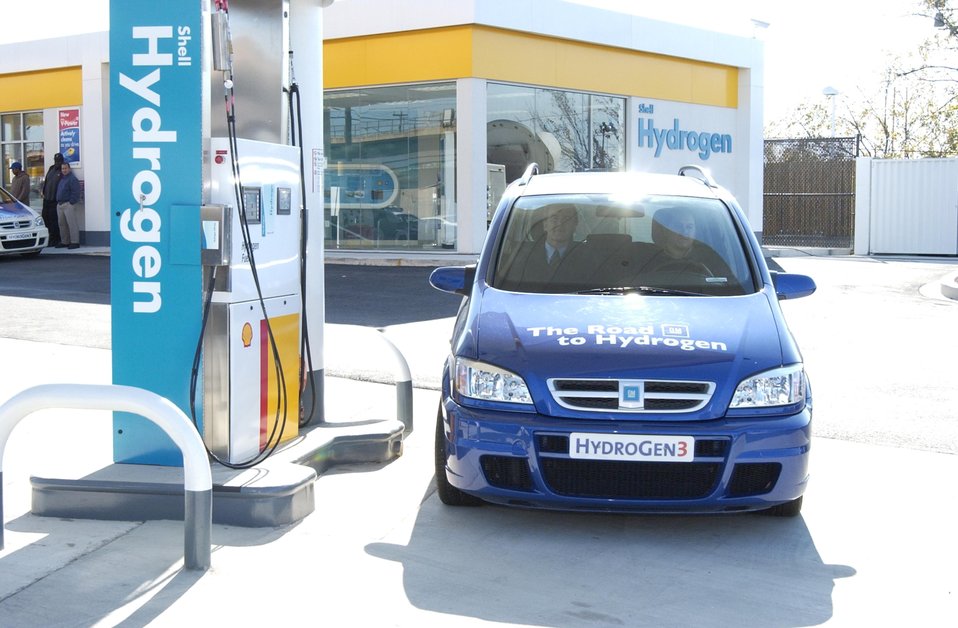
GM HYDROGEN FUEL CELL VEHICLE PULLING UP TO BE REFUELED AT THE SHELL HYDROGEN REFUELING STATION.

THE DEPARTMENT OF ENERGY JOINED SHELL HYDROGEN AND GENERAL MOTORS ON NOVEMBER 10, 2004 AT THE OPENING OF THE FIRST HYDROGEN REFUELING STATION IN WASHINGTON, DC. THIS STATION IS THE FIRST INTEGRATED GASOLINE/HYDROGEN STATION IN NORTH AMERICA. THE SITE WILL BE USED TO REFUEL GENERAL MOTORS FUEL CELL VEHICLES IN THE DOE VEHICLE AND INFRASTRUCTURE LEARNING DEMONSTRATION AND VALIDATION PROJECT. THIS IS THE FIRST STATION TO BE DEPLOYED IN A POTENTIAL WASHINGTON, DC TO NEW YORK HYDROGEN CORRIDOR.